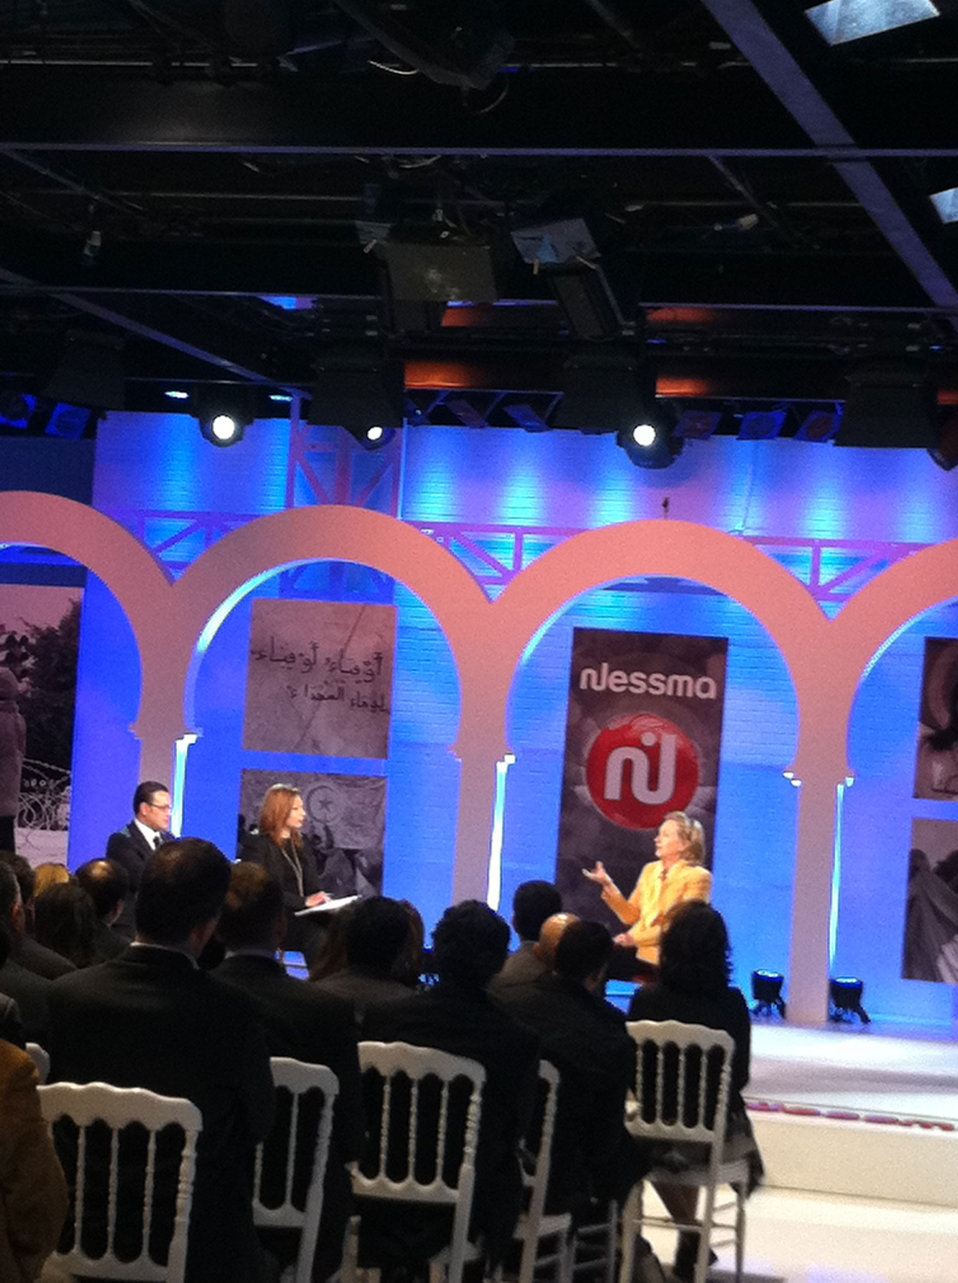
Secretary Clinton Participates in a Townterview

U.S. Secretary of State Hillary Rodham Clinton participates in a townterview with members of civil society at Nessma TV in Tunis, Tunisia, on March 17, 2011.